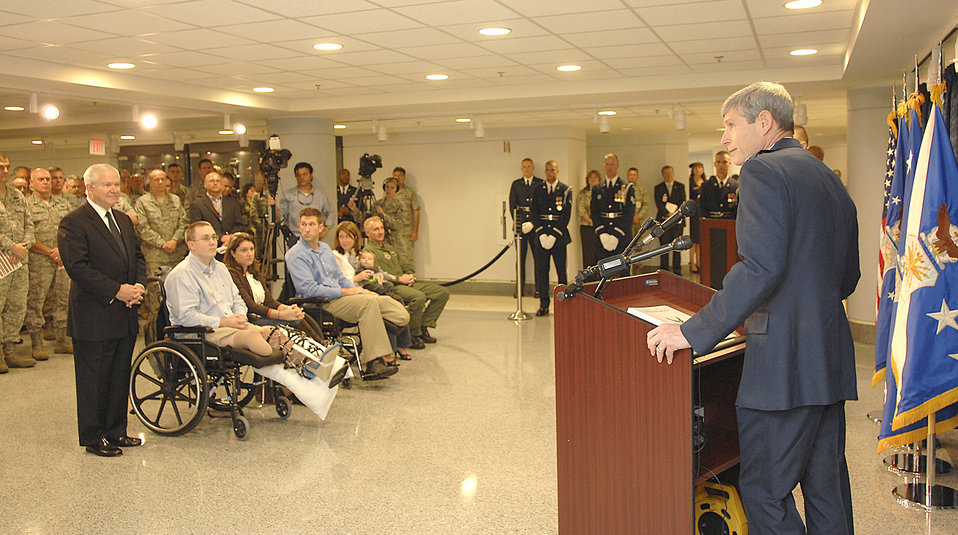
Dedication ceremony of the Airman's Hall

Air Force Chief of Staff Gen. Norton Schwartz speaks at the dedication
ceremony of the Airman's Hall in the Pentagon Sept. 17, 2009. Honored guests,
including the Secretary of Defense Robert Gates and wounded warriors
attended the ceremony.